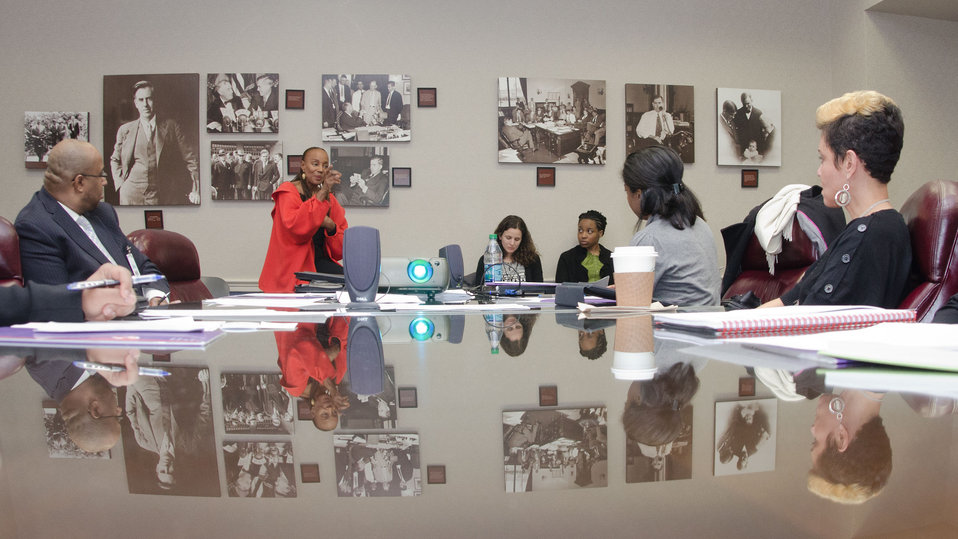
National CARES Mentoring Movement founder and Editor-in-Chief Emeritus, Essence magazine, Susan Taylor (red coat), met for a cross-departmental discussion with Department of Agriculture and Department of Energy personnel in the Whitten Building, U.S. Department of Agriculture, in Washington, D.C., on Tuesday, February 28, 2012. This not-for-profit organization is dedicated to recruiting and connecting mentors with local youth and mentoring organizations to help guide under-resourced children to academic and social success across the country. This discussion provided a continuation of the White House Policy in Action conference that took place in November 2011. The focus of the discussion was about how existing federal programs and administration priorities can be leveraged with her organization, especially as it relates to science, technology, engineering and mathematics (STEM) literacy, education and rural youth.